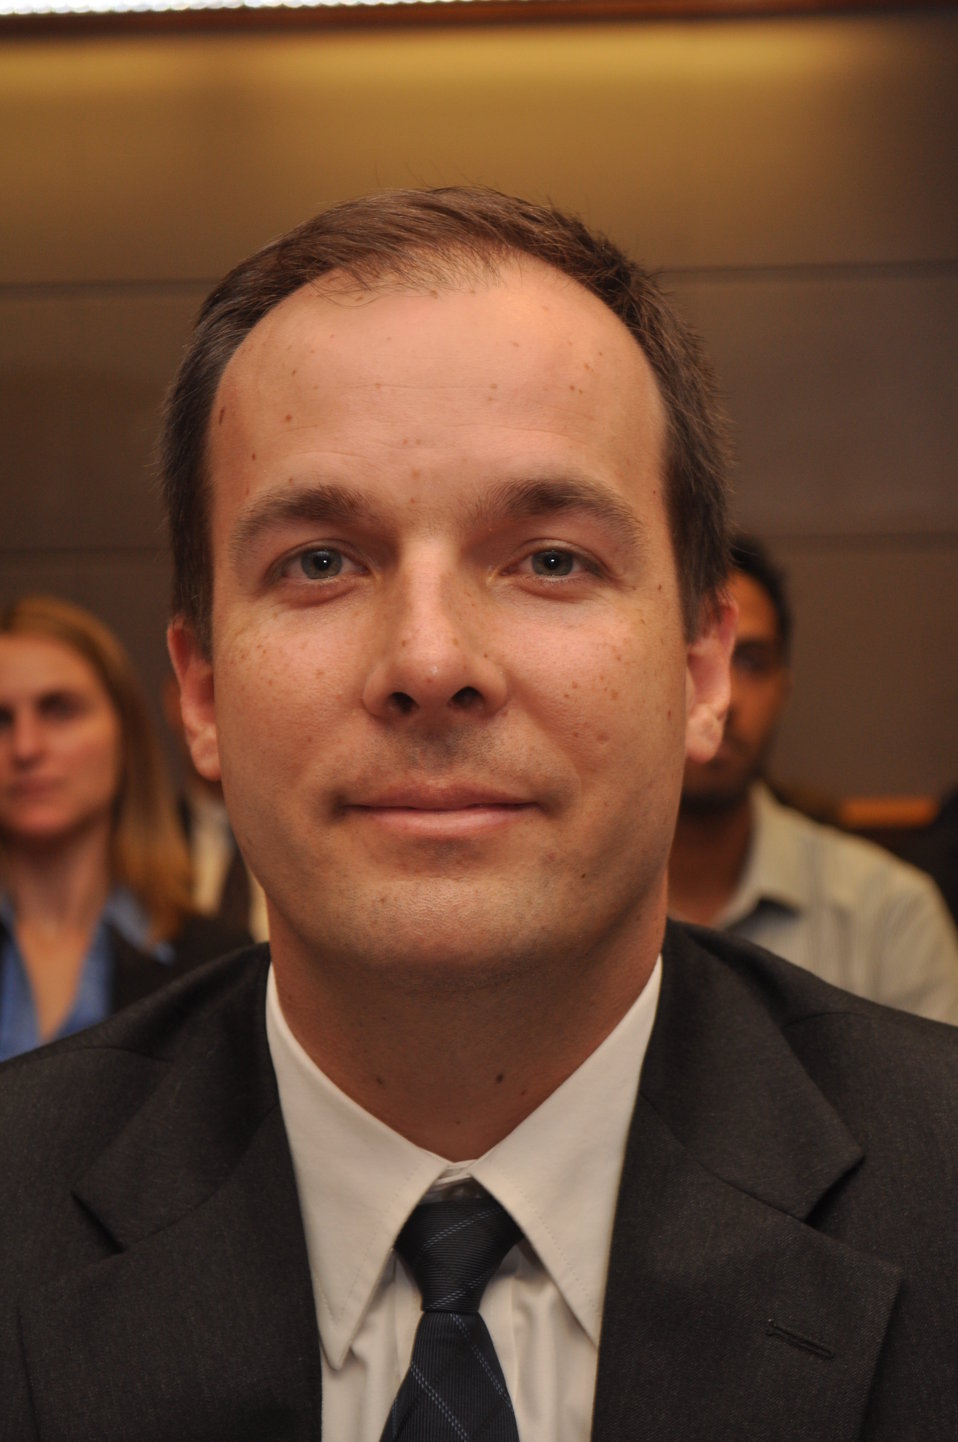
Engineers and Economists

At the August, 2011 Open Meeting the FCC recognized engineers and economists.